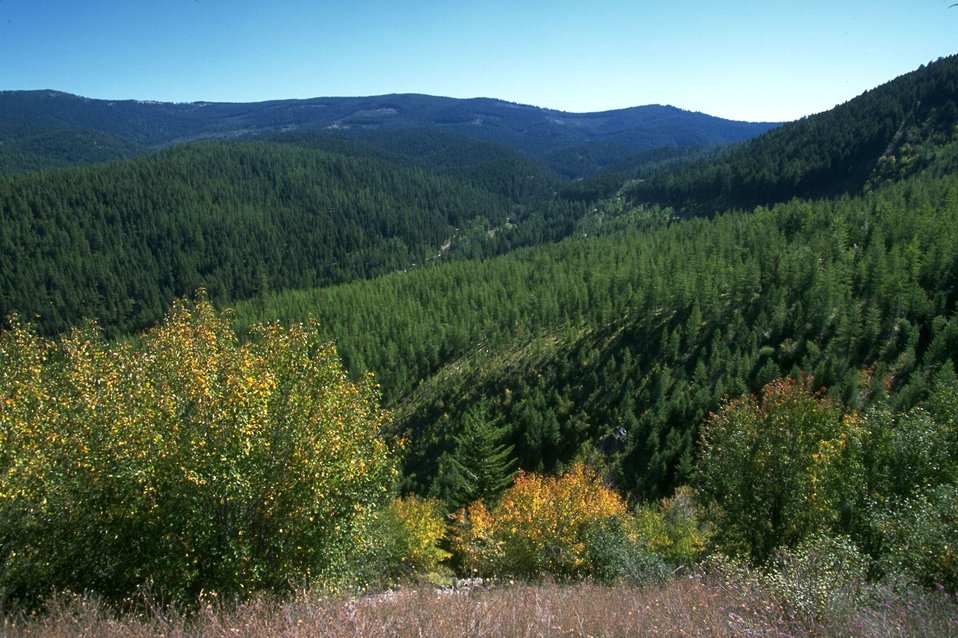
Garnet Back Country Byway view of Elk Creek drainage